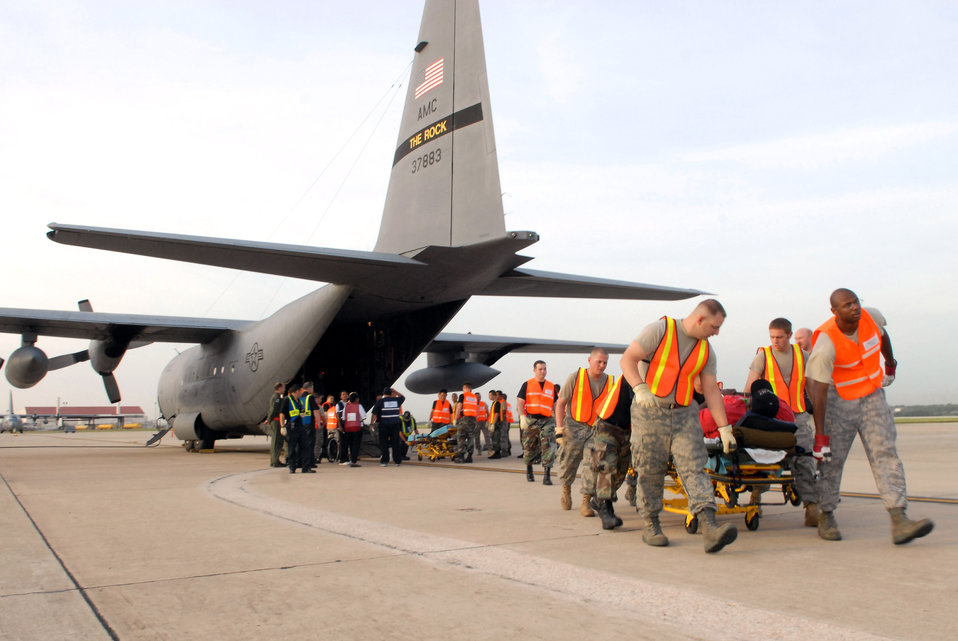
Airman evacuate patients from Beaumont

Airmen from the 37th Training Wing and 59th Medical Wing at Lackland Air Force Base in San Antonio unload hospital patients Sept. 12 evacuated from Beaumont, Texas. The patients were transported in C-130 Hercules aircraft by aircrews from Little Rock AFB and medical Airmen from the 908th Aeromedical Evacuation Squadron at Scott AFB, Ill., in preparation for Hurricane Ike's landfall in southern Texas.